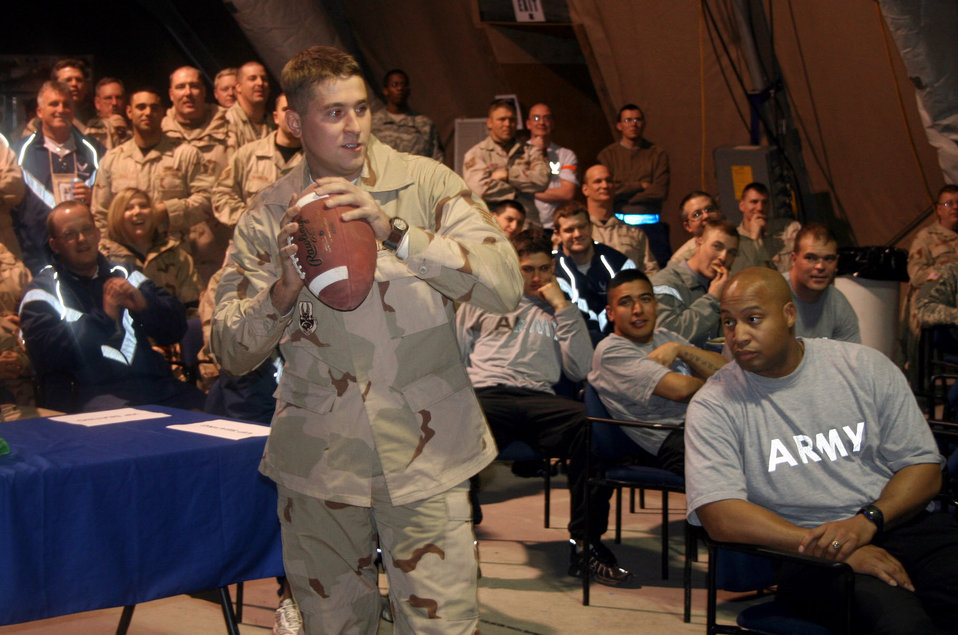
Super Bowl in Southwest Asia

MANAS AIR BASE, Kyrgyzstan (AFPN) -- Airmen and Soldiers deployed here take turns in a football toss contest during Super Bowl halftime, racking up points for the big prize -- a portable DVD Player. The Airmen are with the 376th Air Expeditionary Wing.